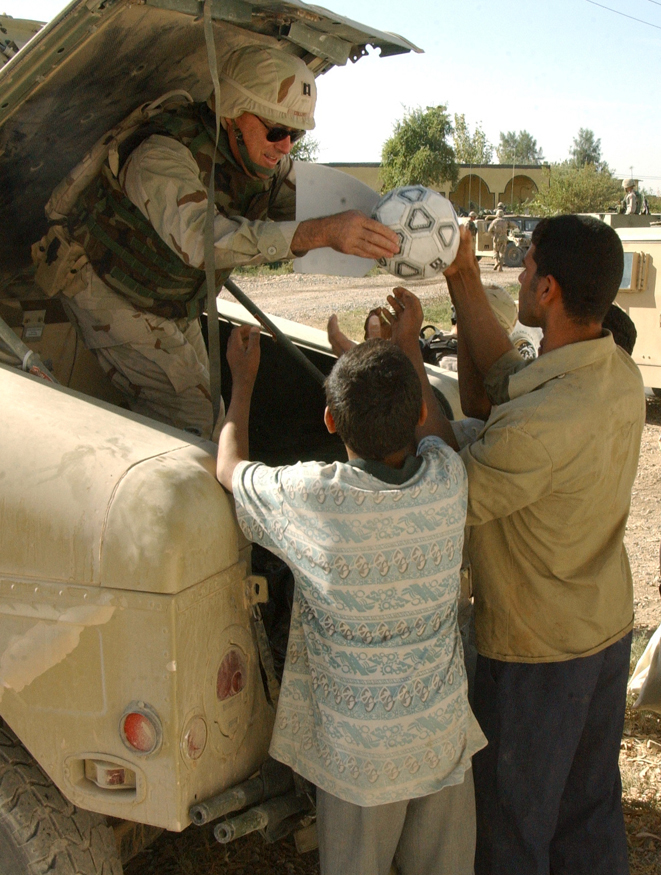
Airmen take part in Operation Pencil Box

NEAR BALAD AIR BASE, Iraq -- Chaplain (Capt.) Quinton Collins gives away a soccer ball during a visit to an elementary school here Oct. 24. The visit was part of Operation Pencil Box, a humanitarian project to deliver school supplies to Iraqi children. Chaplain Collins is assigned to the 332nd Air Expeditionary Wing chapel at the air base.